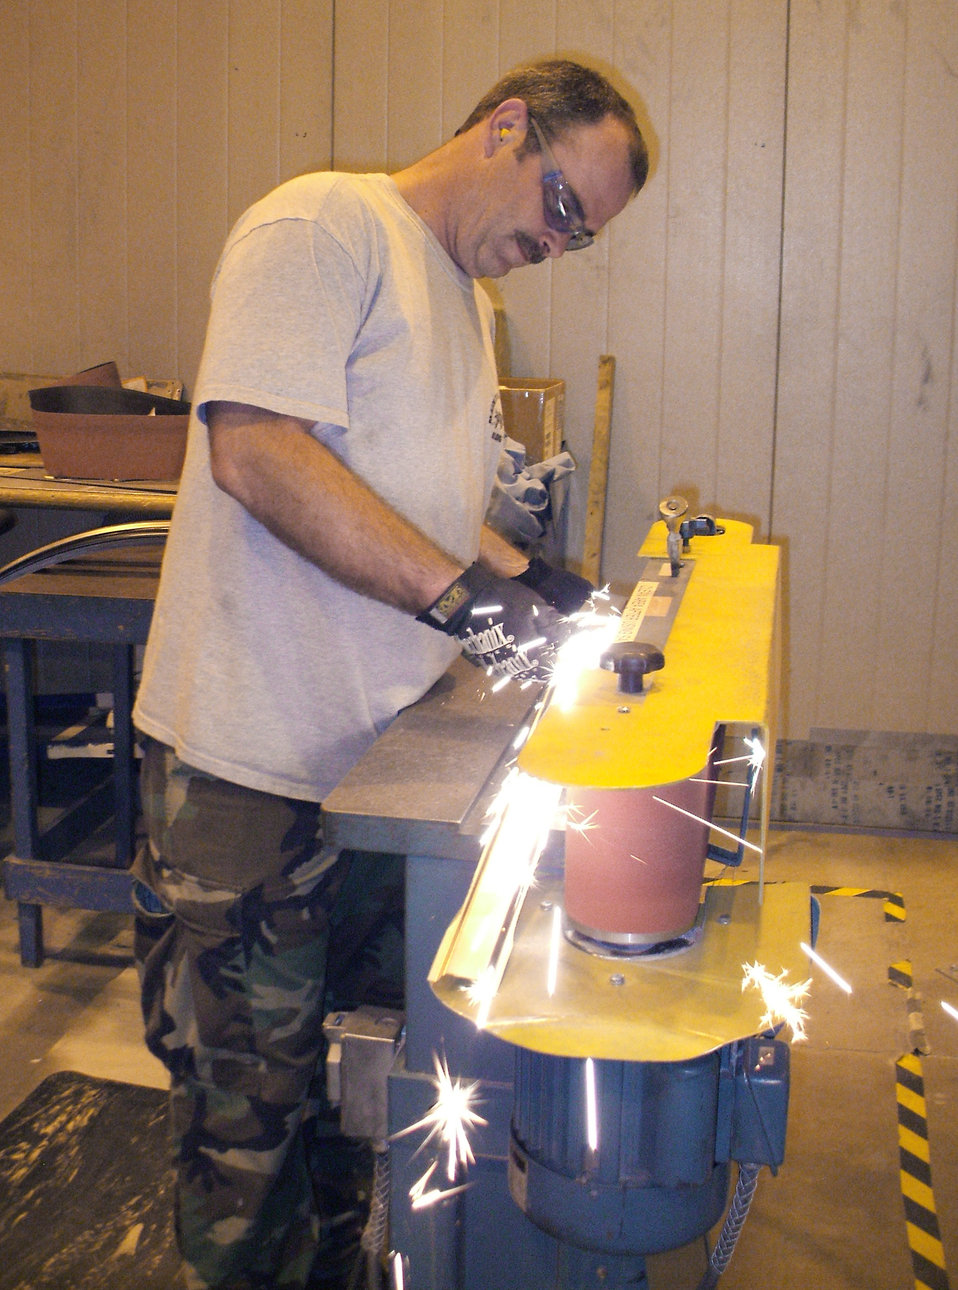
Robins unit answers urgent call for AC-130U repair

David Stroupe grinds a steel part to the required dimensions for the C-130 Hercules infrared suppression system Aug. 13 at Robins Air Force Base, Ga. Mr. Stroupe is a sheet metal mechanic.